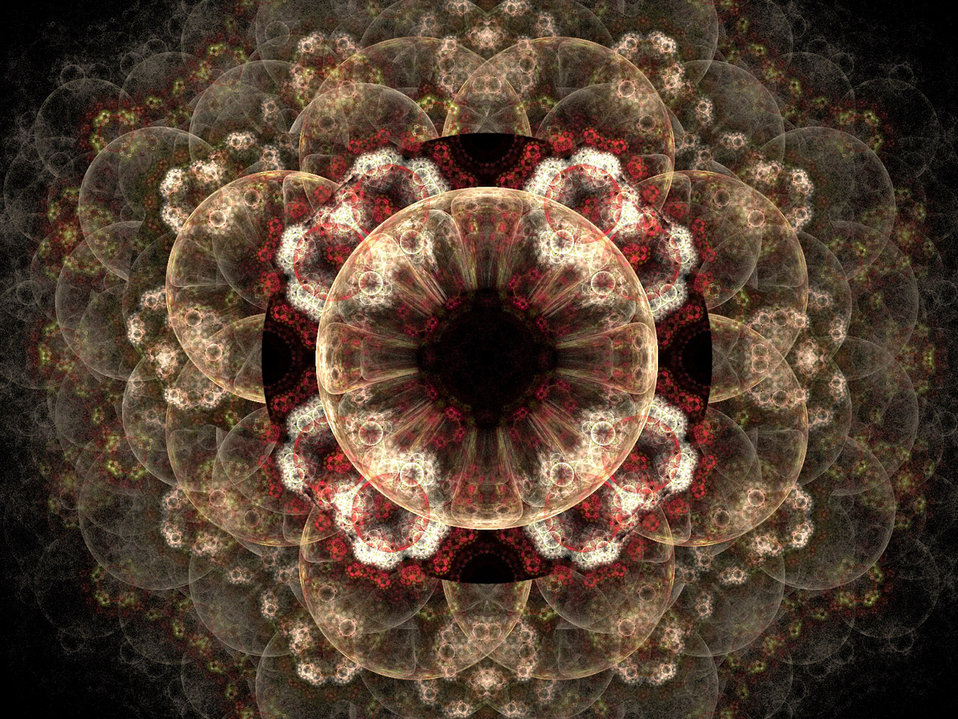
Pretty fractal

Fractal image in maroon and creamy pink.